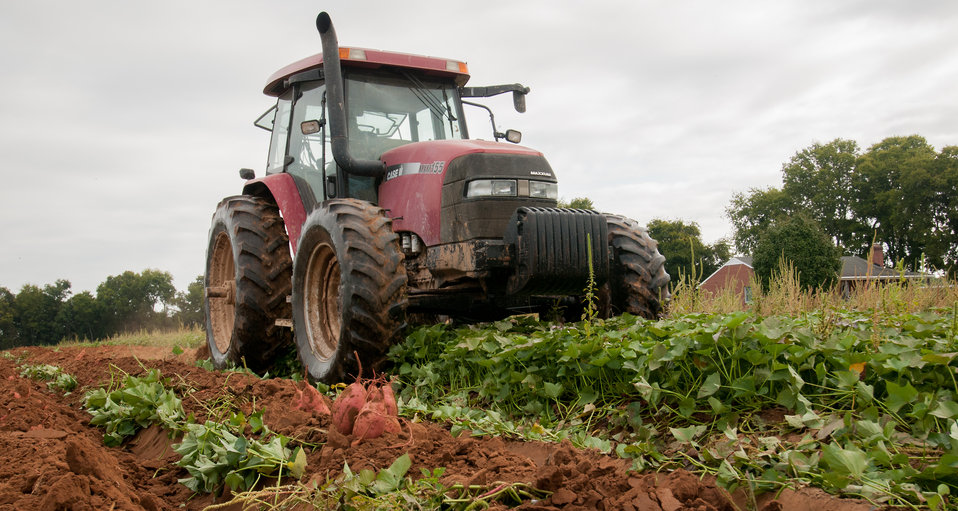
The sweet potatoes harvest at Kirby Farms in Mechanicsville, VA on Friday, Sept. 20, 2013. Kirby Farms devotes 200 acres of the farm to eggplant, spinach, beets, tomato, jalapeno peppers, melons and a variety of greens. Soybeans and small grain are grown on the remaining 300 acres. The fertile Virginia soil and their management practices, allows Kirby Farms to double and triple crop fields with rotational crop selection. Wholesalers, who buy from this farm, sell the produce to major supermarkets in the Mid-Atlantic region, from North Carolina to Maryland. Restaurateurs in the local area prepare and serve their harvest to patrons in the Greater Richmond Region.